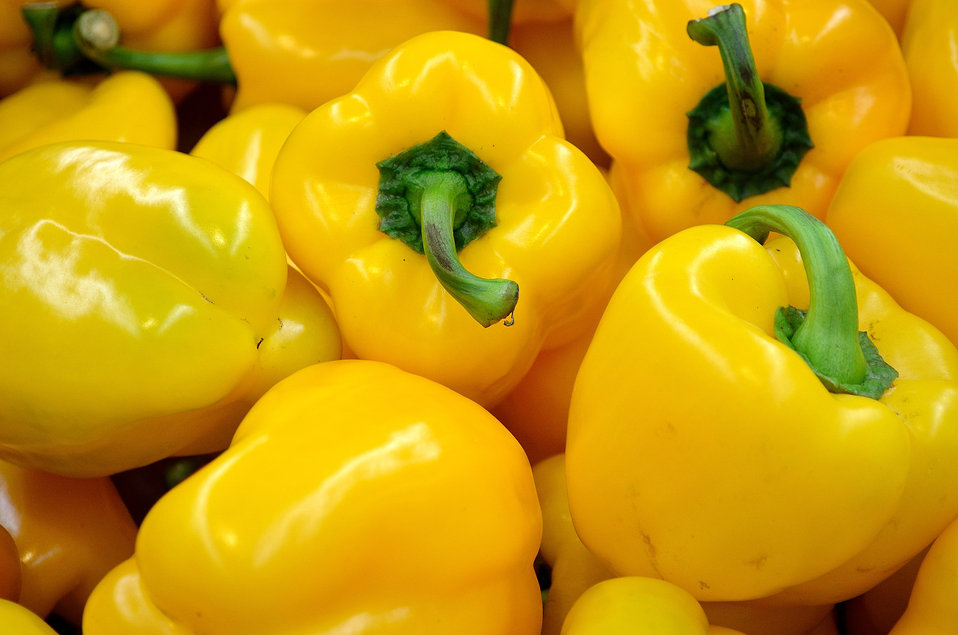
Yellow pepper.